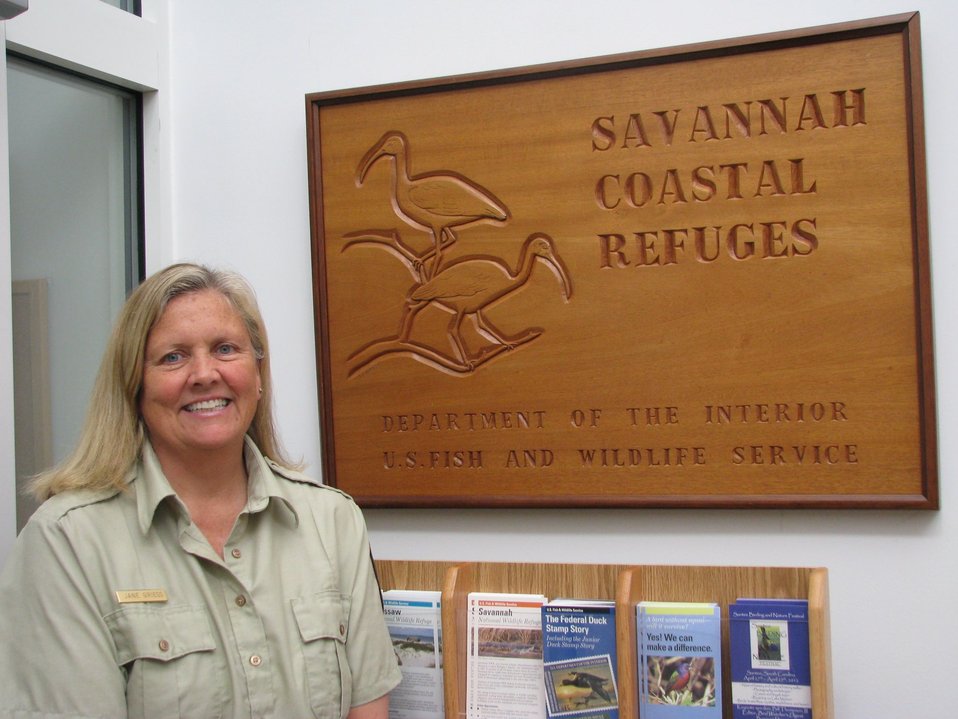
Jane Griess, manager of Savannah National Wildlife Refuge and the six other refuges along the South Carolina and Georgia coasts, says she first learned her love of nature at the feet of her mom, Margaret Griess. “She even gave me my own caterpillar cage for my birthday one year,” says Jane.